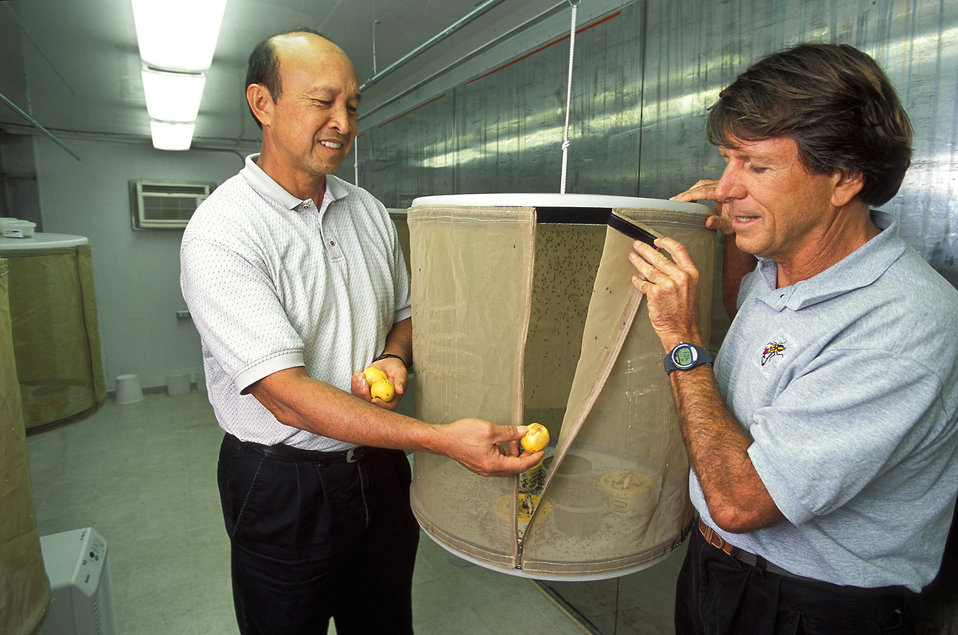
Gonsalves and entomologist Roger Vargas expose fly-infested guavas to parasitic wasps (Biosteres arisanus) as part of the Hawaii area wide pest management program for the oriental fruit fly on Dec 27, 2011. This tiny wasp is a natural enemy of the oriental fruit fly and is the biological component of the program.